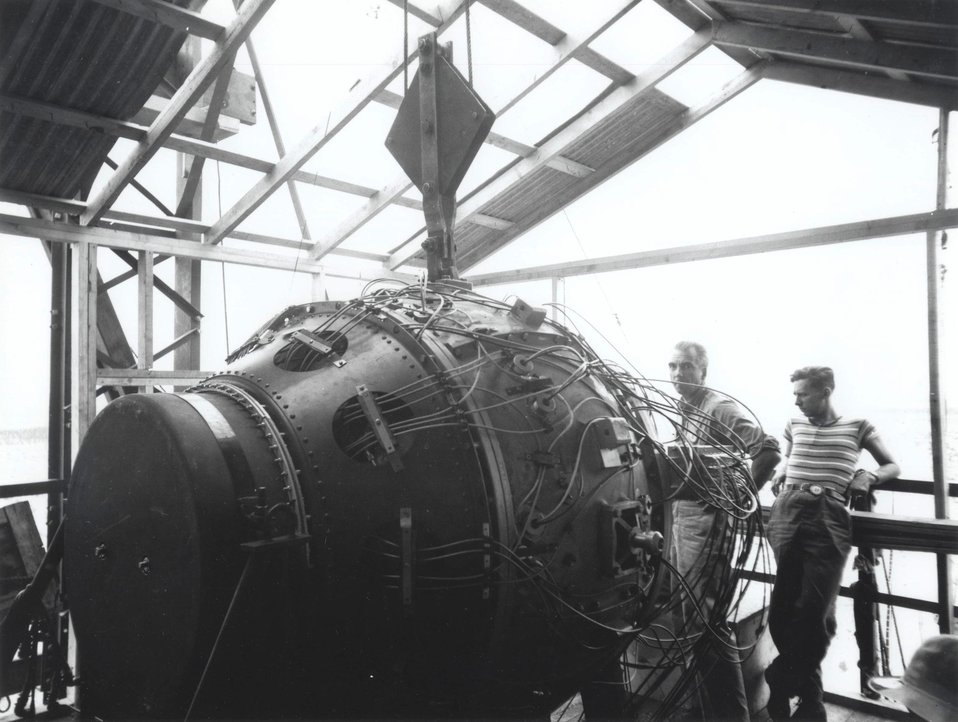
BRADBURY WITH TRINITY DEVICE